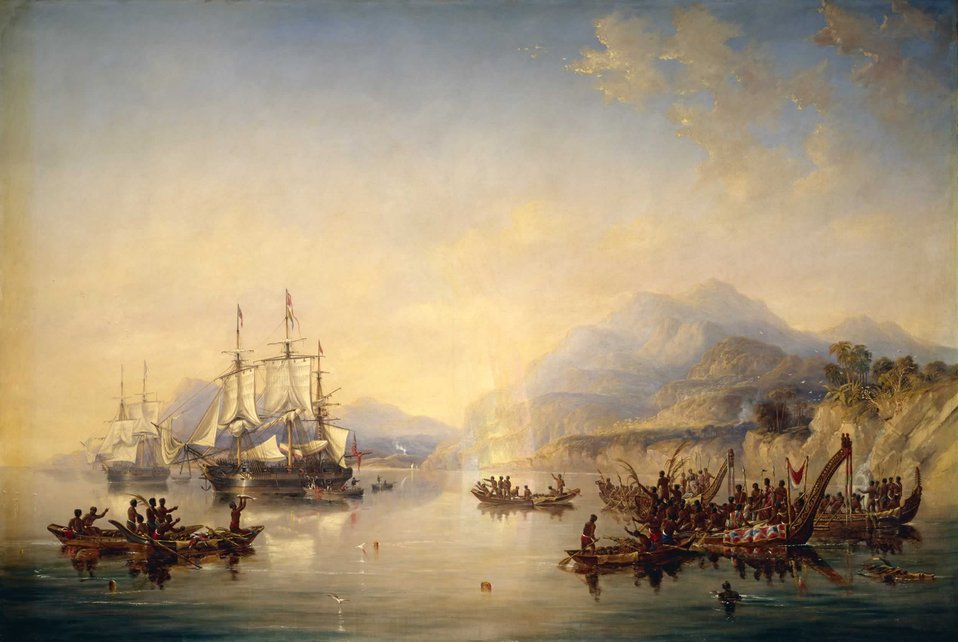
'Erebus' and the 'Terror' in New Zealand, August 1841 by John Wilson Carmichael